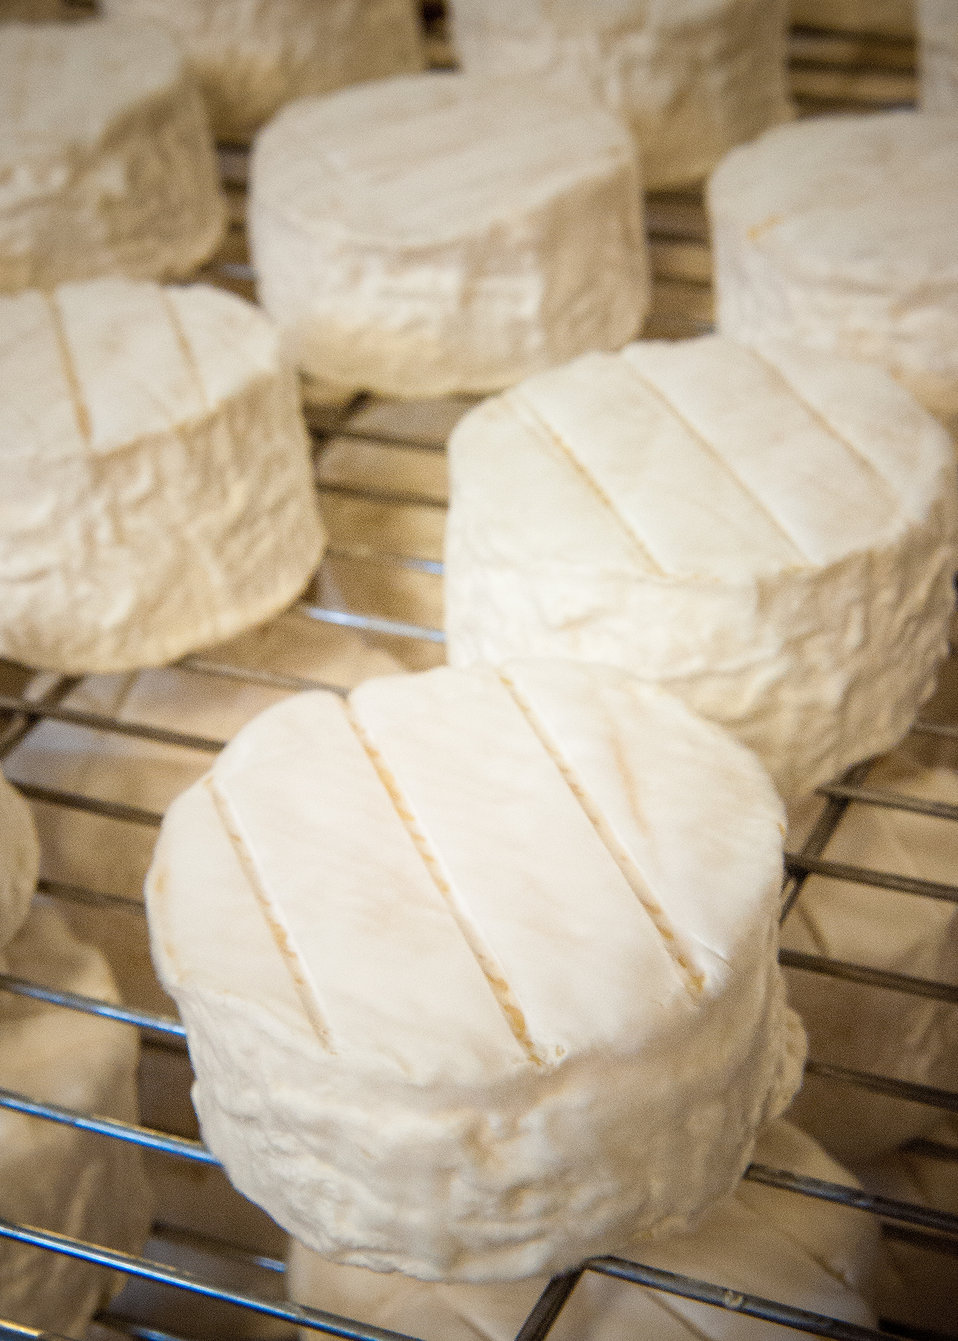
Moses Sleeper cheese is a bloomy-rind cheese developed at The Cellars at Jasper Hill in Greensboro, VT. Beneath a thin bloomy rind lies a gooey, milky core that shows a complex array of flavors: cauliflower, crème fraîche, and toasted nuts. The thin bloomy rind of this cheese is carefully cultivated in a vault at Jasper Hill dedicated to the proper rind development for this style of cheese. Moses Sleeper was a Revolutionary War-era scout who was shot on Vermont’s Northeast Kingdom’s legendary Bayley Hazen Military Road. The Cellars at Jasper Hill an innovative 22,000 square foot underground facility consisting of seven ageing caves received a U.S. Department of Agriculture (USDA) Rural Development (RD) Business and Industry Guaranteed (BIG) Loan. The loan was used to construct state-of-the-art artesian cheese aging cave facility to support expanded on-farm value-added cheese production as well as contract aging for other local cheese makers so they may access the growing market for artisan cheese nationwide on Sep. 19, 2013.